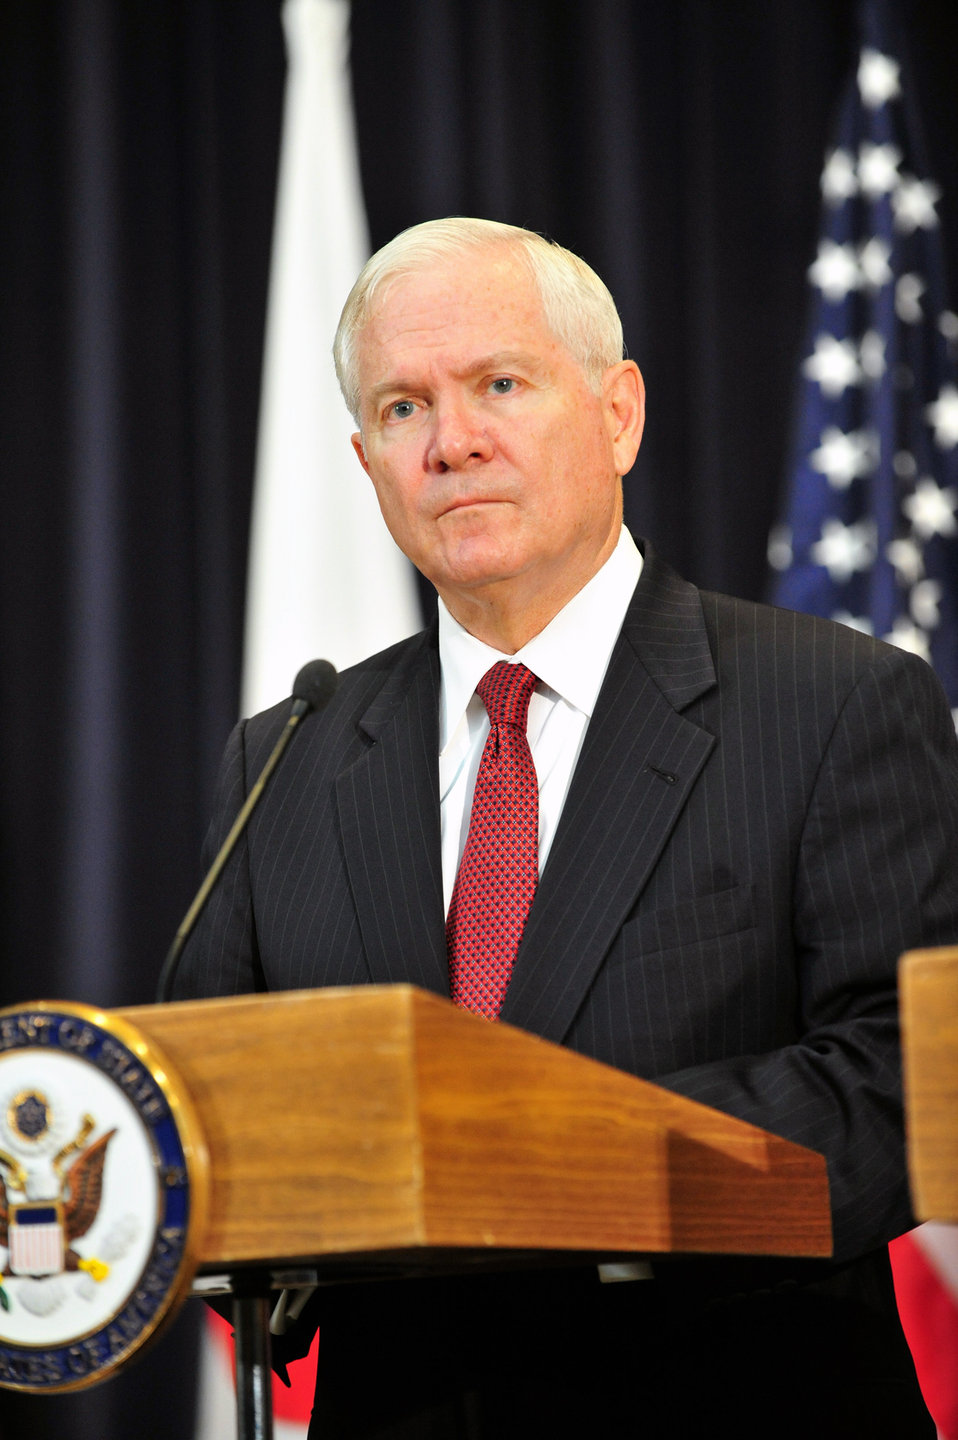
Secretary Gates Delivers Remarks

U.S. Secretary of Defense Robert Gates delivers remarks at the joint press conference after the U.S.-Japan Security Consultative Committee meeting, known as the 2 2, at the U.S. Department of State in Washington, D.C., on June 21, 2011.